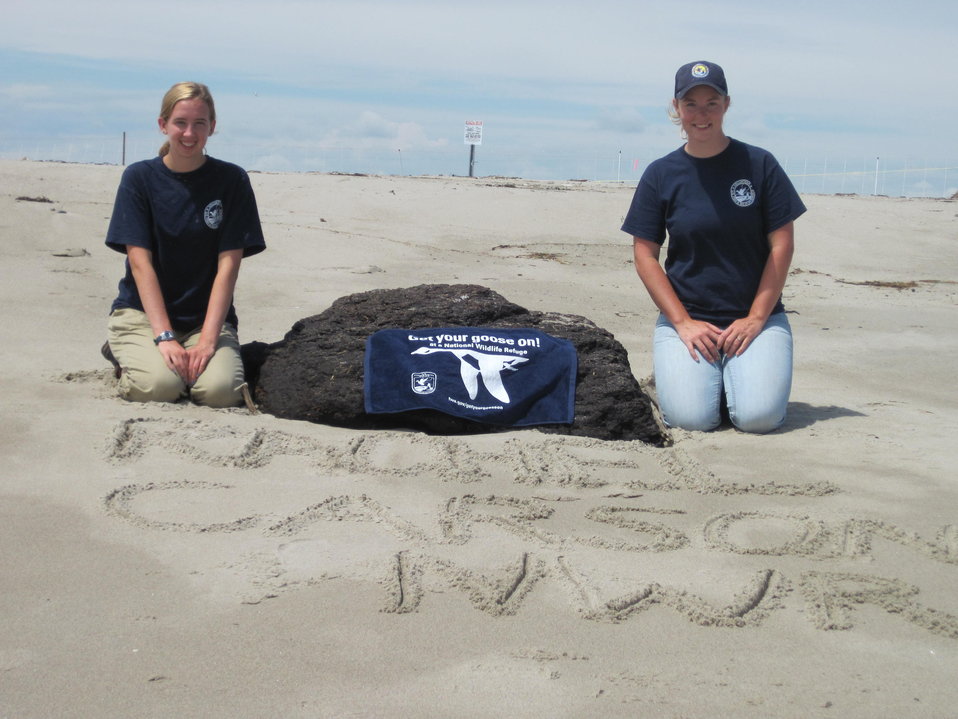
Get Your Goose On!

Bri Rudinsky and Brynna Bolger do some piping plover outreach (and of course GYGO!).